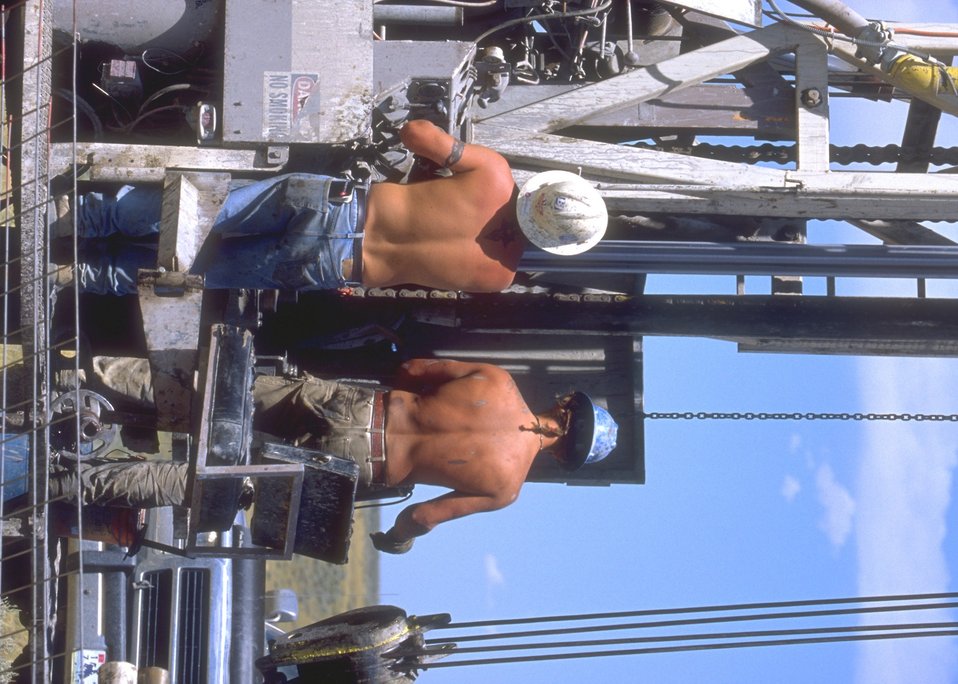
Drill site for coal bed methane, Buffalo Field Office.